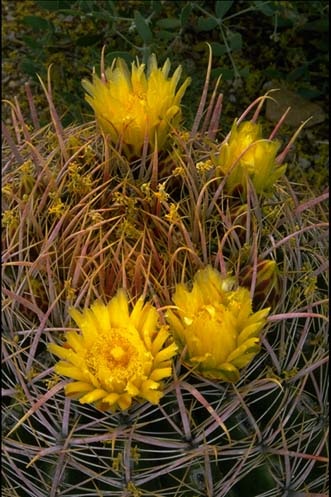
Barrel cactus in full bloom.